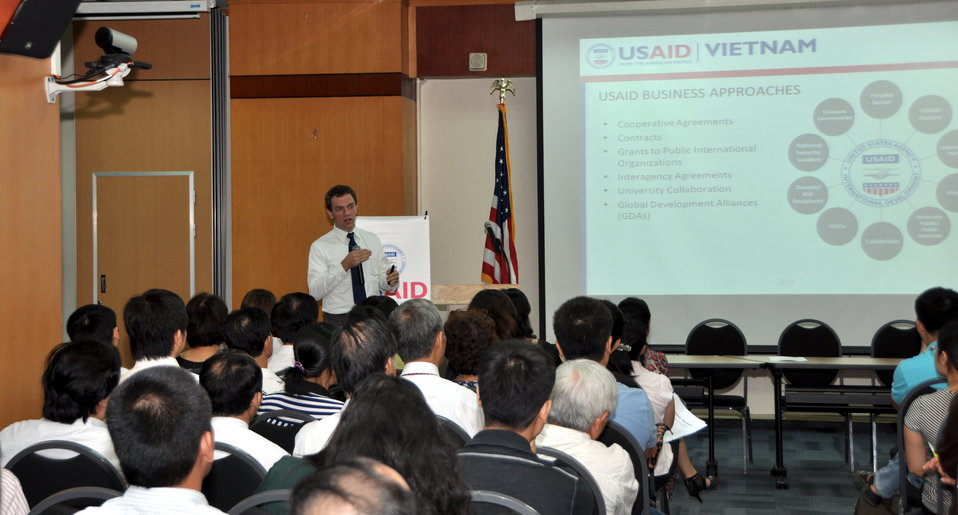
Development Grants Program Workshop in Hanoi

July 24, 2013